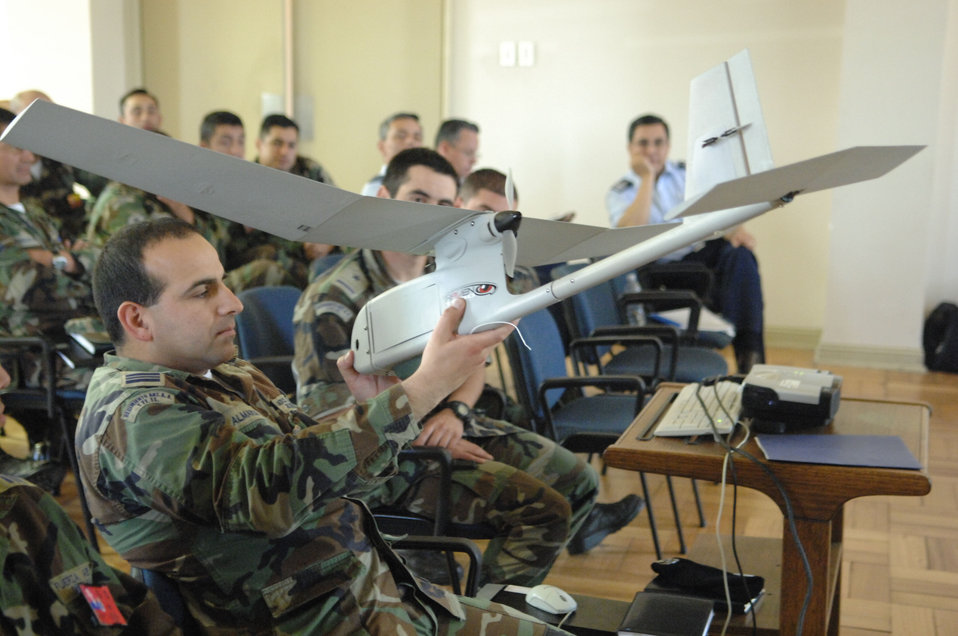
Operation Southern Partner

Chilean airmen examine a U.S. Air Force unmanned aerial system Oct. 29 at Quintero Air Base, Chile during an information exchange for Operation Southern Partner. The two-week operation is an in-depth, subject-matter exchange emphasizing partnership, cooperation and sharing of information with partner nation Air Forces in Latin America.